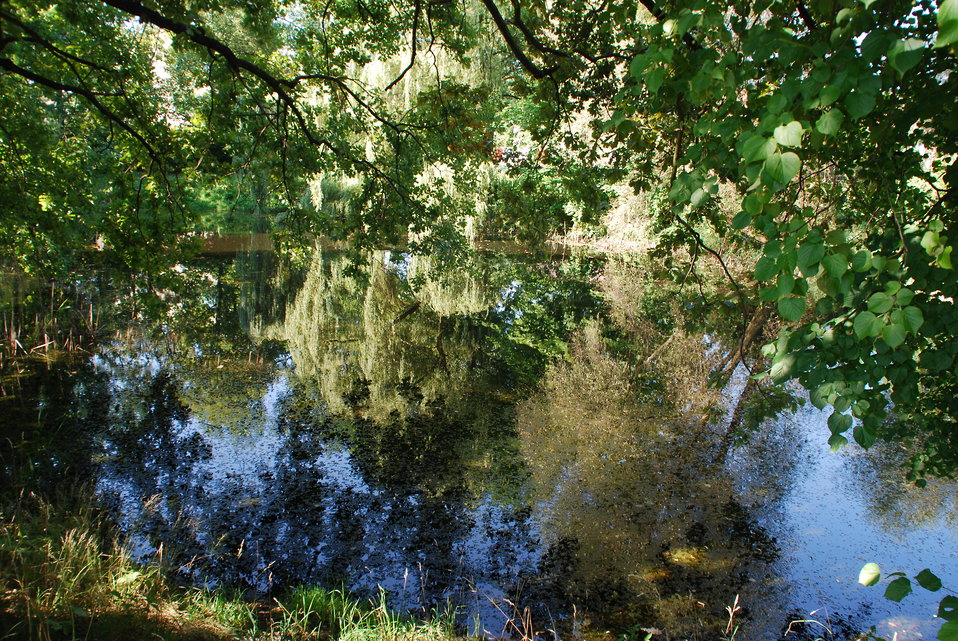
Theaterteich in Frankfurt (Oder), am ehemaligen Kleist-Theater, Friedrich-Ebert-Straße